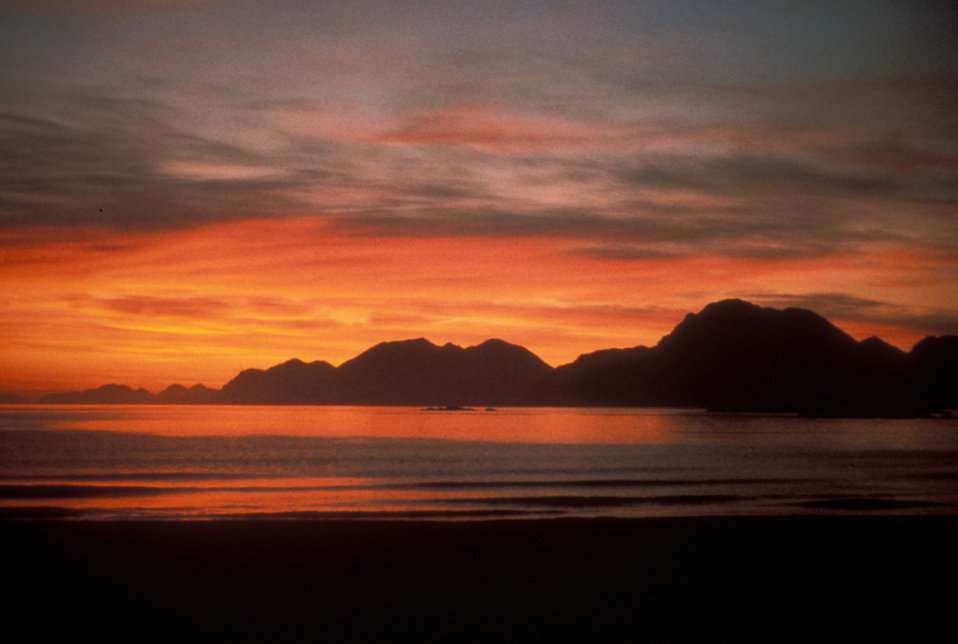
A beach sunset

Adak sunrise from Kuluk Beach September 1981. Aleutian Island Unit.